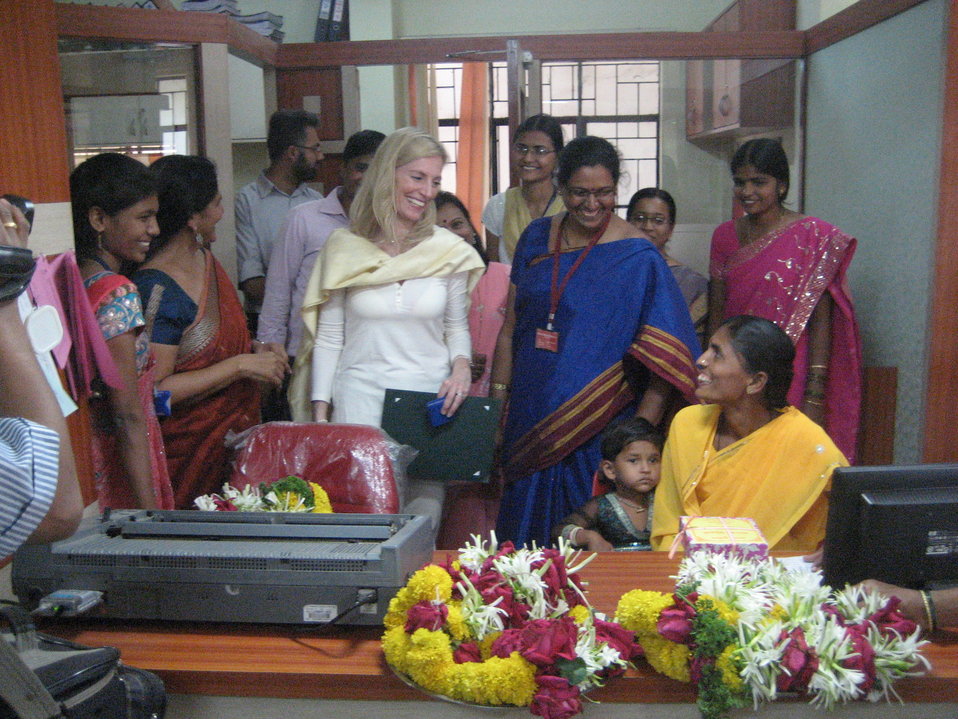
Lael Brainard's Visit to India

Under Secretary Lael Brainard's trip to India focused on the key role women play in India’s growth trajectory.